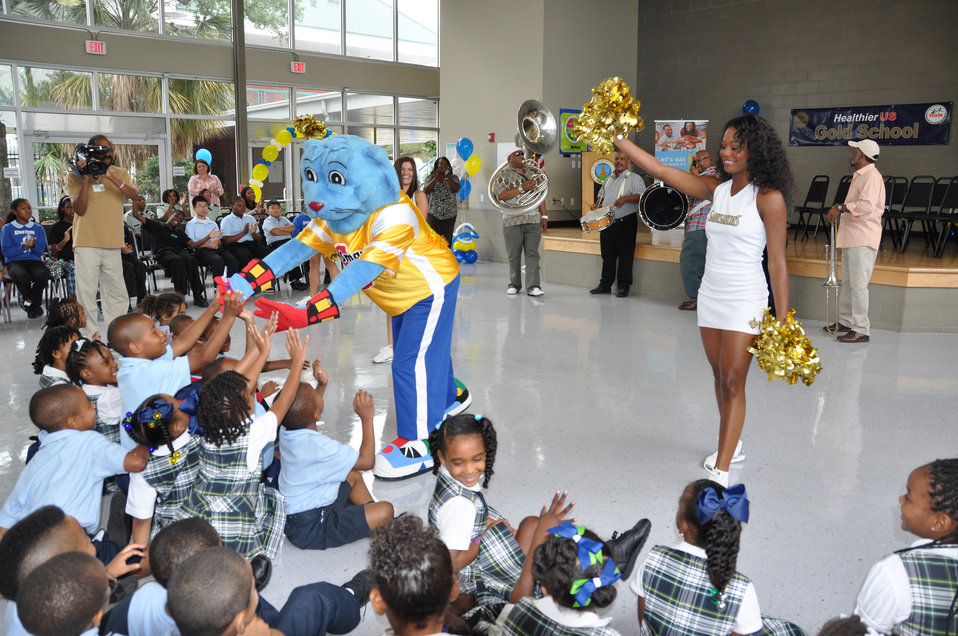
Power Panther, New Orleans Saints cheerleaders, and The Original Royal Players Brass Band join Orleans Parish students to celebrate healthy school meals and the presentation of Healthier US School Challenge awards on Aug. 20, 2012. Twelve elementary schools in the Orleans Parish, LA achieved gold with distinction awards. The Healthier US School Challenge is a voluntary certification initiative that recognizes schools for their efforts in improving food and beverage offerings, teaching kids about nutritious food choices and being physically active, providing opportunities for physical activity, and having supportive school wellness policies.